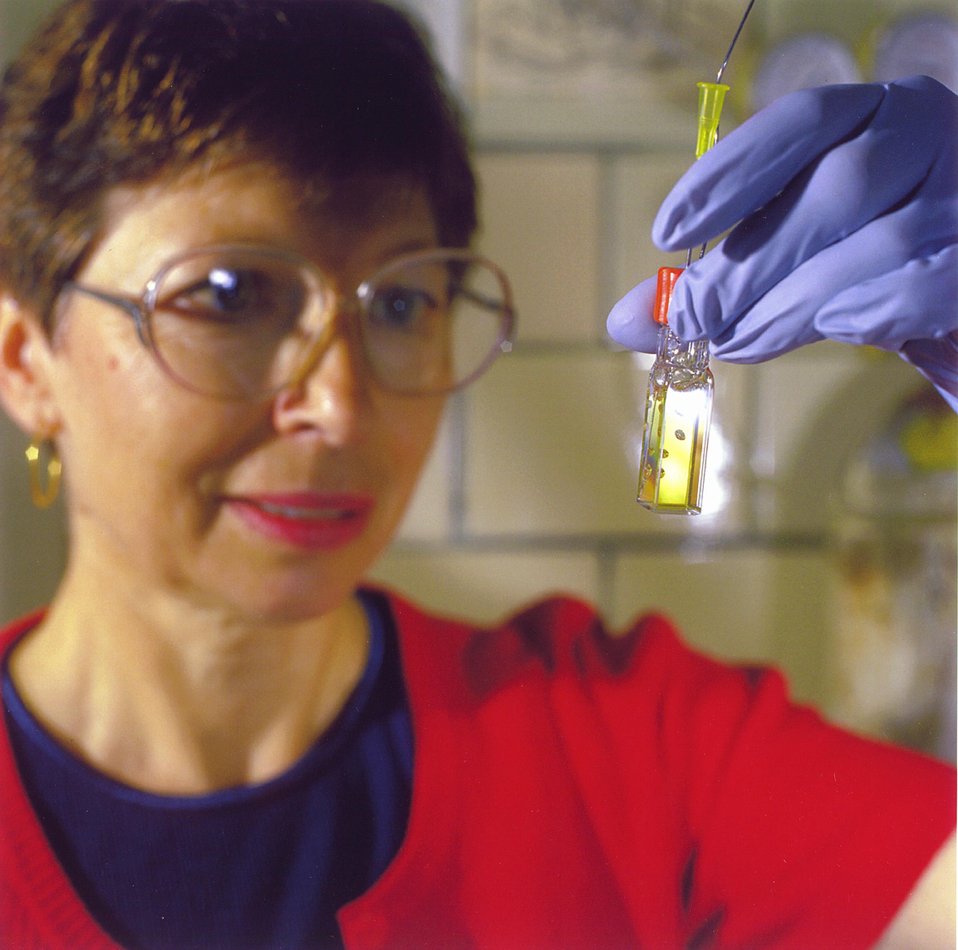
AMES LAB CHEMIST CHECKING STREAM OF OXYGEN NEEDED TO CARRY OUT THE HYDROCARBON OXIDATION REACTION.

AMES CHEMIST USES ENVIRONMENTALLY FRIENDLY LIGHT AND AIR TO PERFORM SOME CHEMICAL REACTIONS.